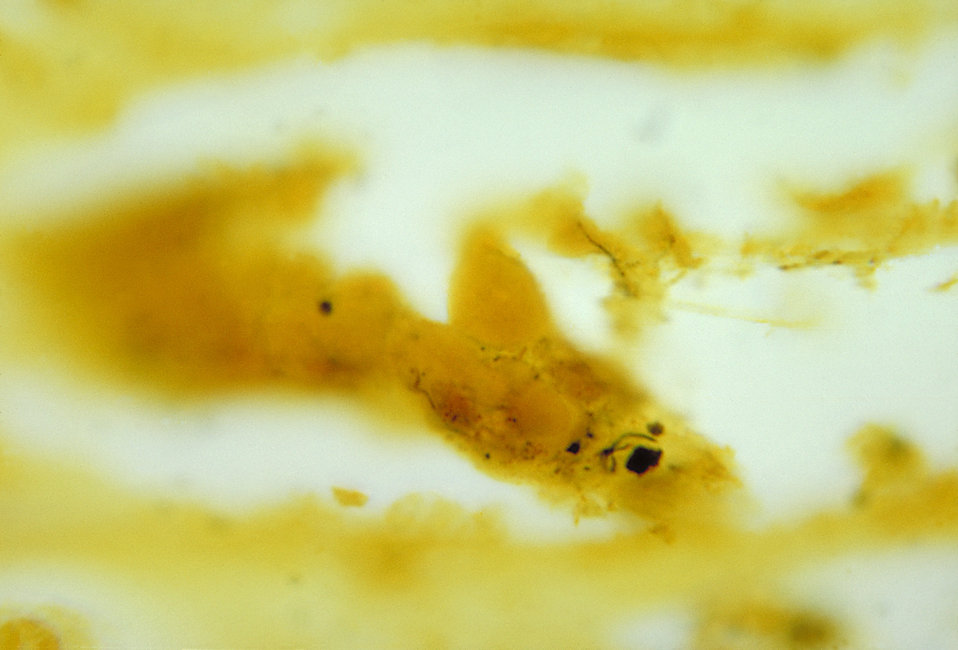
Photomicrograph of kidney tissue, using a silver staining technique, revealing the presence of Leptospira bacteria.